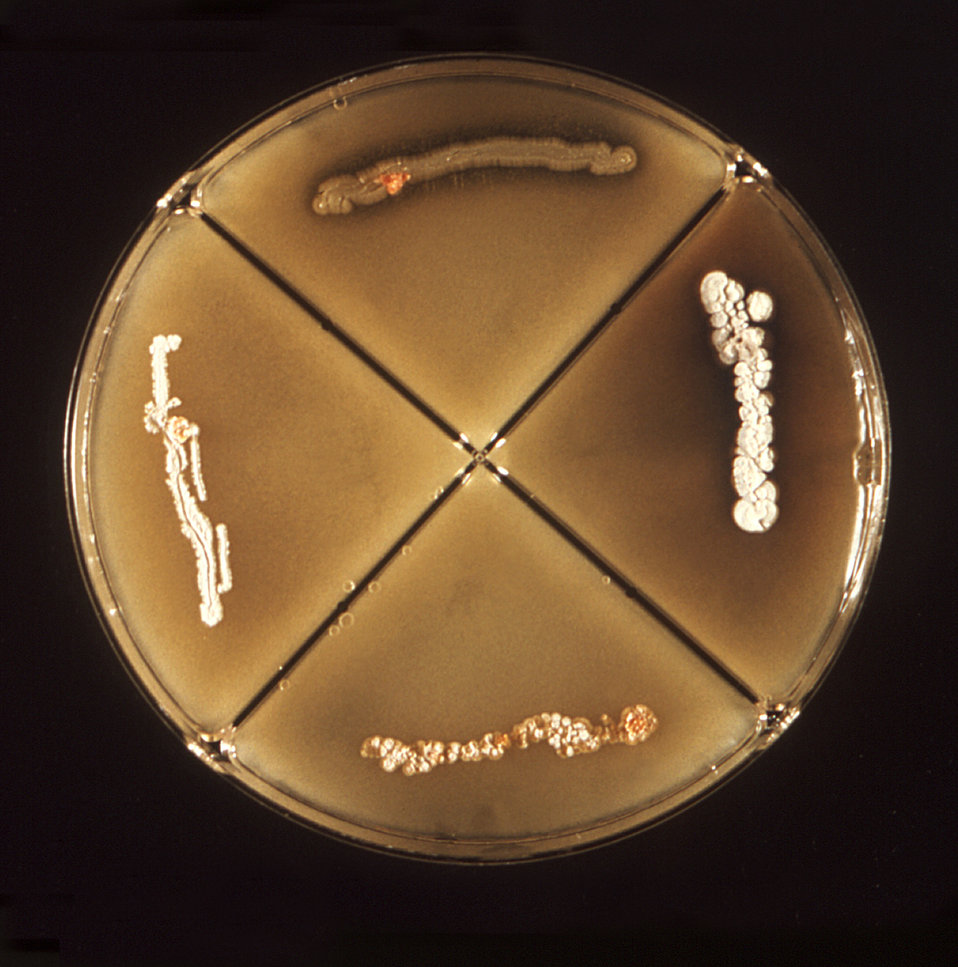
This photograph depicted a QUAD Plate containing a xanthine growth media upon which Nocardia and Streptomyces Gram-positive bacterial colonies were grown. The results here were two positive, i.e., the ability for the organisms to decompose xanthine, and two negative growth patterns. Positive results appear as a clear halo around the colonies, while a negative result manifests as an absence of this clear halo, and instead one will note the deposition of a melanin-like pigment.